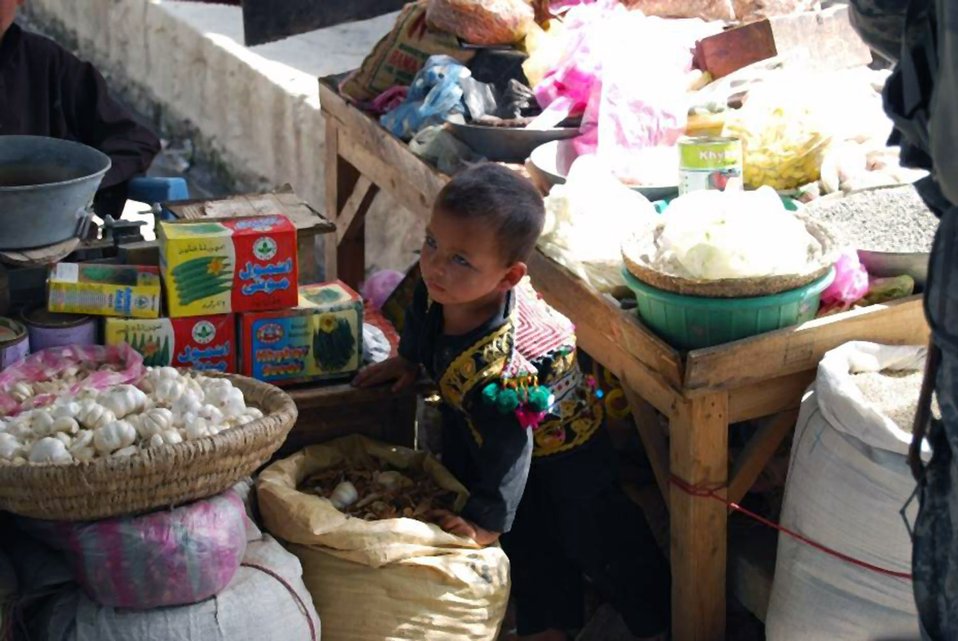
Reconstruction team helps Afghans

A young girl crawls from under her parents' selling table during a Provincial Reconstruction Team economic assessment of Mehtar Lam May 3 in the Laghman Province in Afghanistan. The assessment, conducted by members of Army civil affairs, confirmed that the soaring flour prices affecting Afghanistan are also affecting Laghman Province, with many reporting prices doubling and tripling before the Islamic Republic of Afghanistan took action. In April, the IRoA cabinet members put aside $2.5 billion Afghani so that the ministry of finance could buy more wheat and ease the burden on the Afghan people.